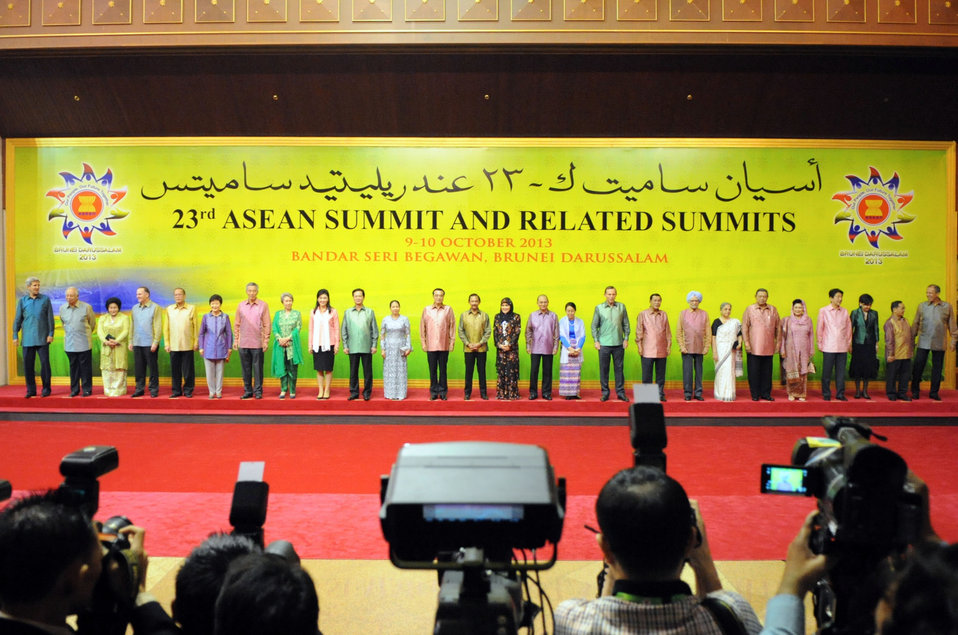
Secretary Kerry Poses With ASEAN Leaders

U.S. Secretary of State John Kerry poses with other regional heads of state and leaders of delegation before the start of a dinner and cultural program at the ASEAN Summit meeting in Bandar Seri Begawan, Brunei, on October 9, 2013.